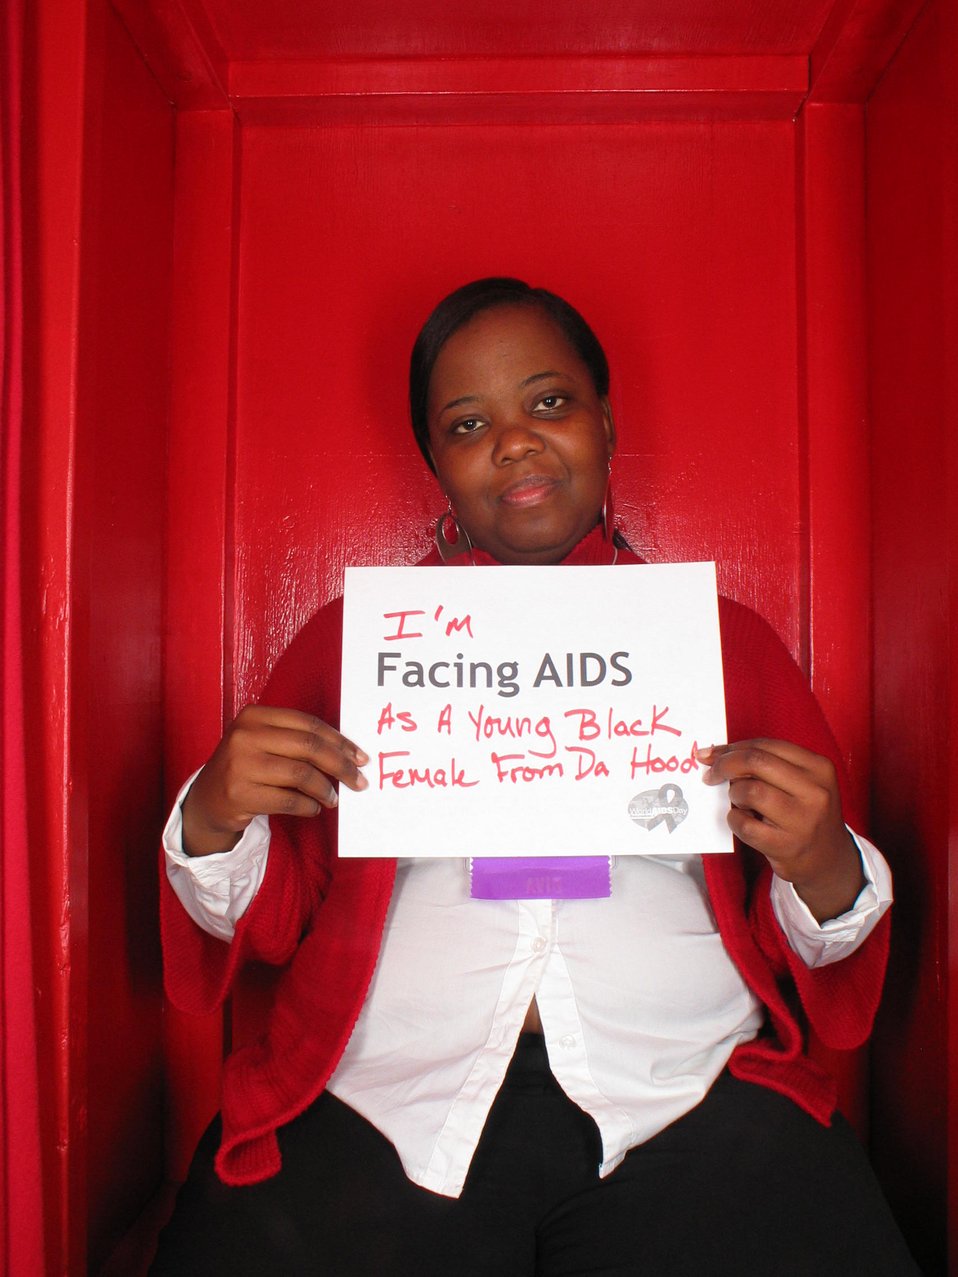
I'm Facing AIDS as a young black female from da hood.